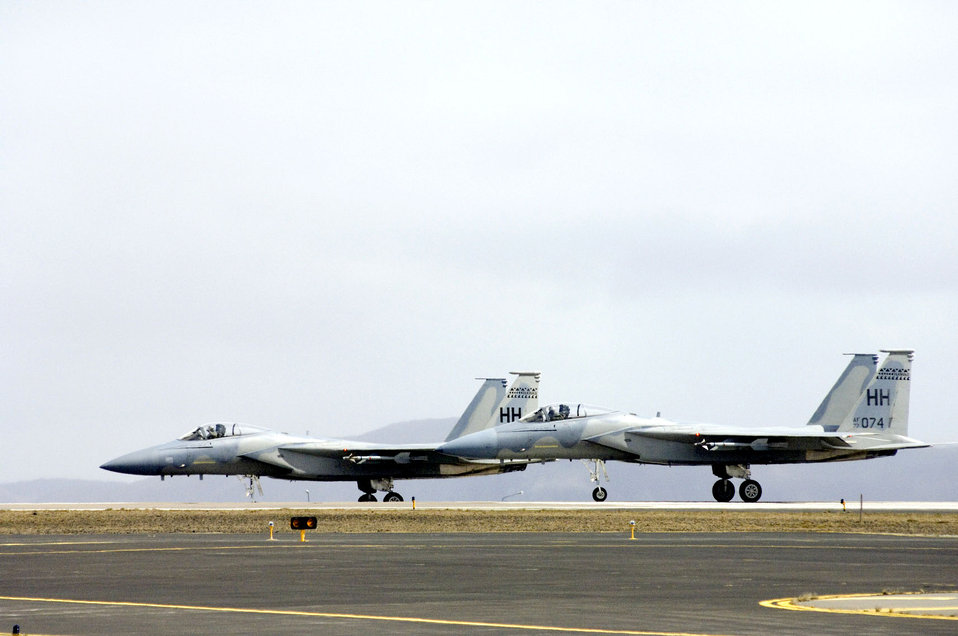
Drawdown at Keflavik

F-15 Eagles wait to take off from Naval Air Station Keflavik, Iceland, on Monday, May 22, 2006. Airmen and Sailors are reducing operations after more than 50 years of U.S. presence at the base. The F-15s and crews are from the Hawaii Air National Guard's 154th Fighter Wing at Hickam Air Force Base.